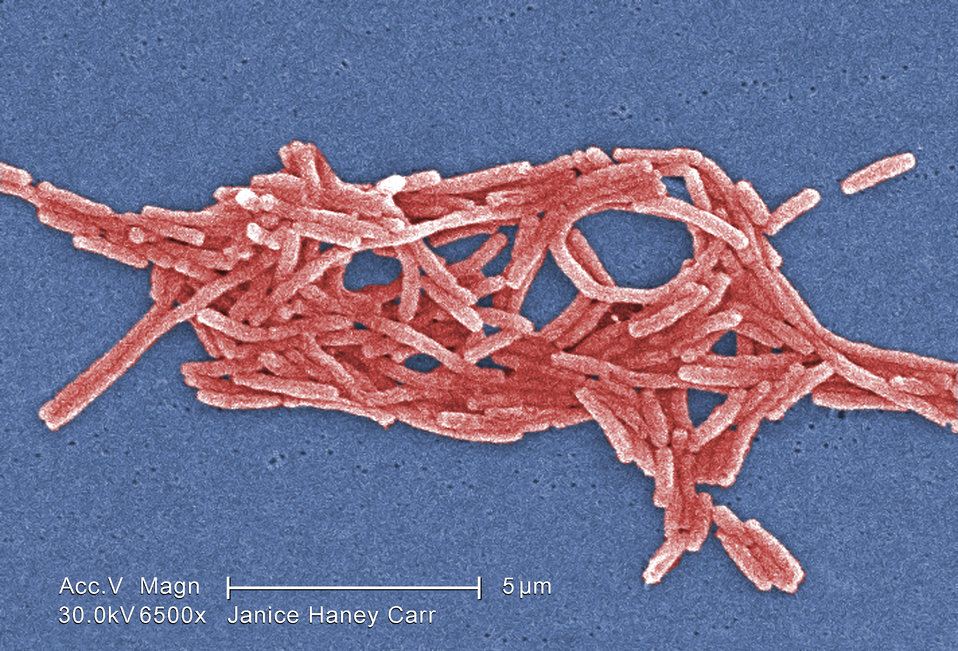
Under a moderately-high magnification of 6500X, this colorized scanning electron micrograph (SEM) depicted a grouping of Gram-negative Legionella pneumophila bacteria. Please see PHIL 11092 through 11160 for additional SEMs of these organisms, specifically PHIL 11121 for a black and white version of this image. In some of these views you'll note the presence of flagellar appendages.